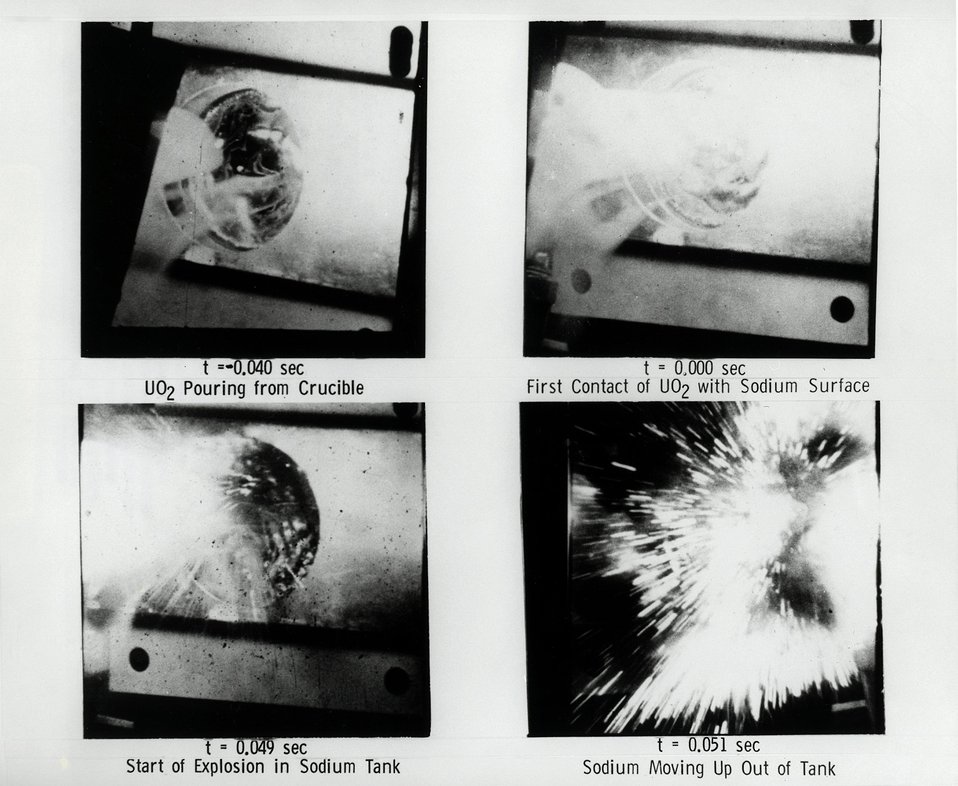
The sequence pictures taken at the moment of the dropping of 13 grams of molten uranium oxide into a tank of 280 grams liquid sodium at 394 degrees C.
c.1972